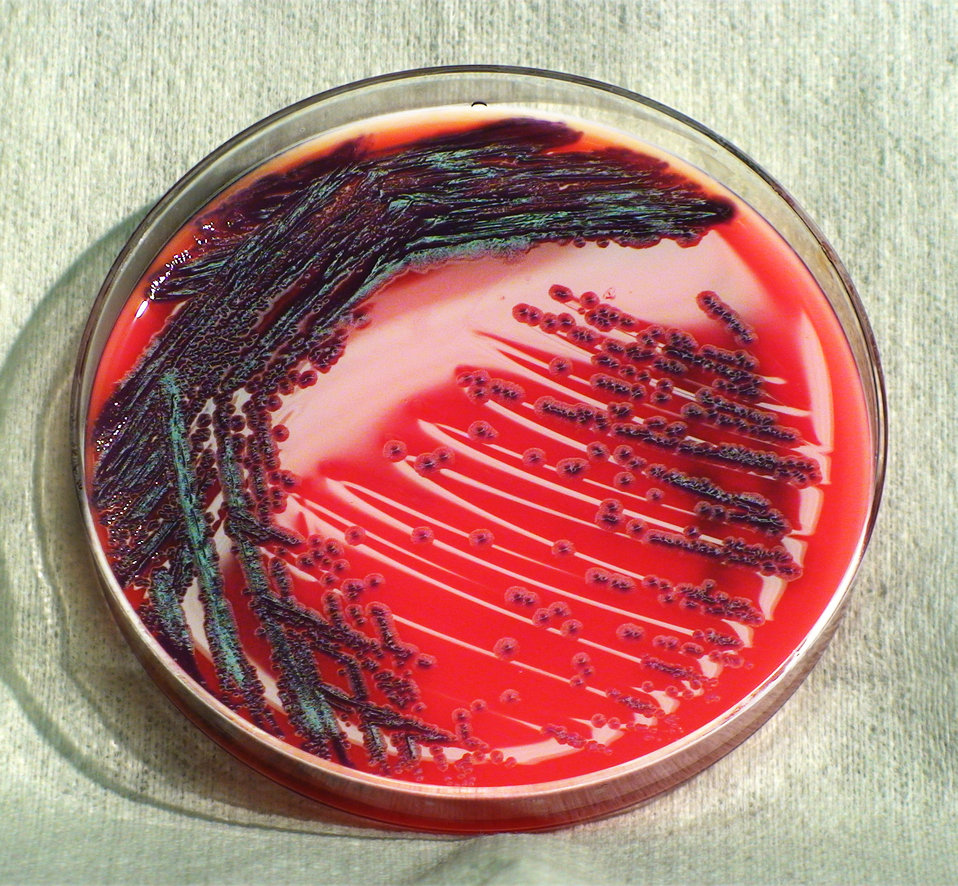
This photograph depicts the colonial morphology displayed by Gram-negative Chromobacterium violaceum bacteria, which was grown on a medium of sheep's blood agar (SBA), for a 24 hour time period, at a temperature of 37�C. See PHIL 12434, for a closer view of these dark-violet colored bacterial colonies.